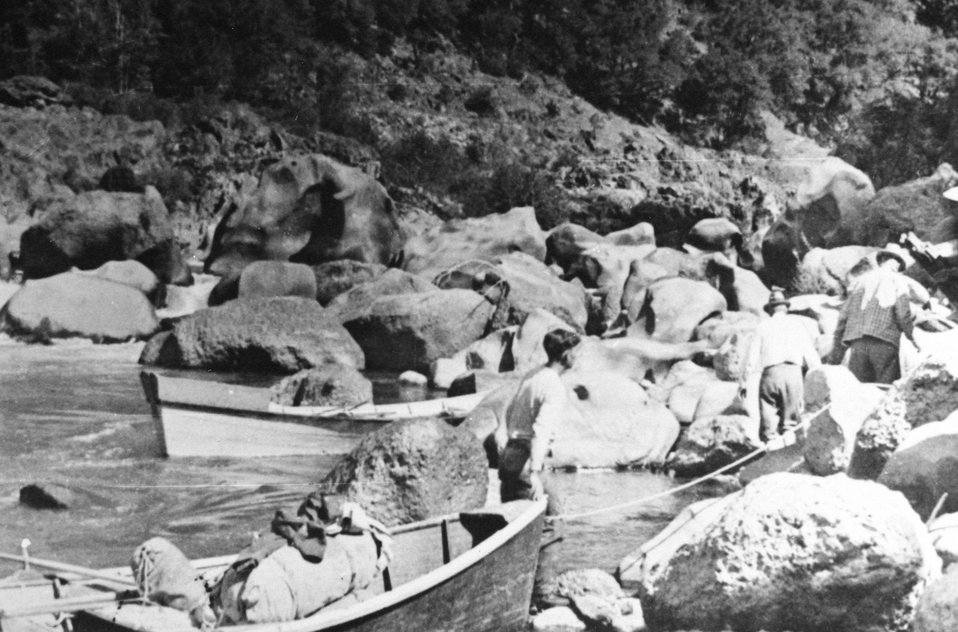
Portaging around Blossom Bar C. 1920